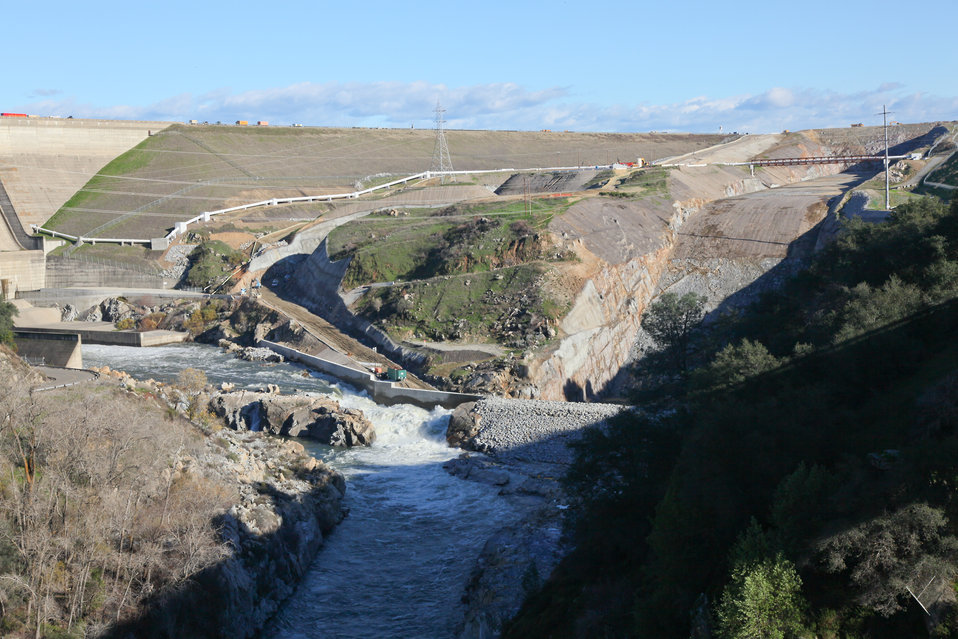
Winter water releases at the Folsom Spillway

FOLSOM, Calif. (Jan. 4, 2011) - Water continues to be released at the Folsom Dam here Dec. 30. Flows were rated at about 13,000 cubic feet per second (cfs), down from the over 30,000 cfs that was being released Dec. 16. A retaining wall keeps the flow directed into the American River and out of the construction site for the new spillway and access roadway.